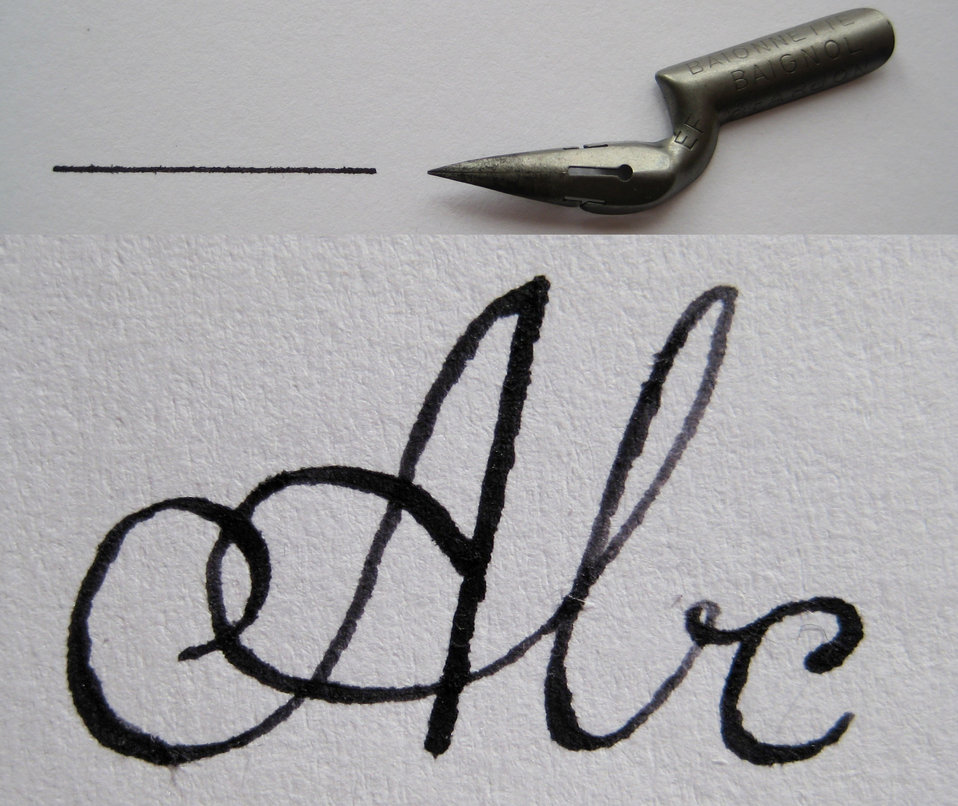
Deutsch: Ellenbogenfeder mit Strich und Schriftbeispiel